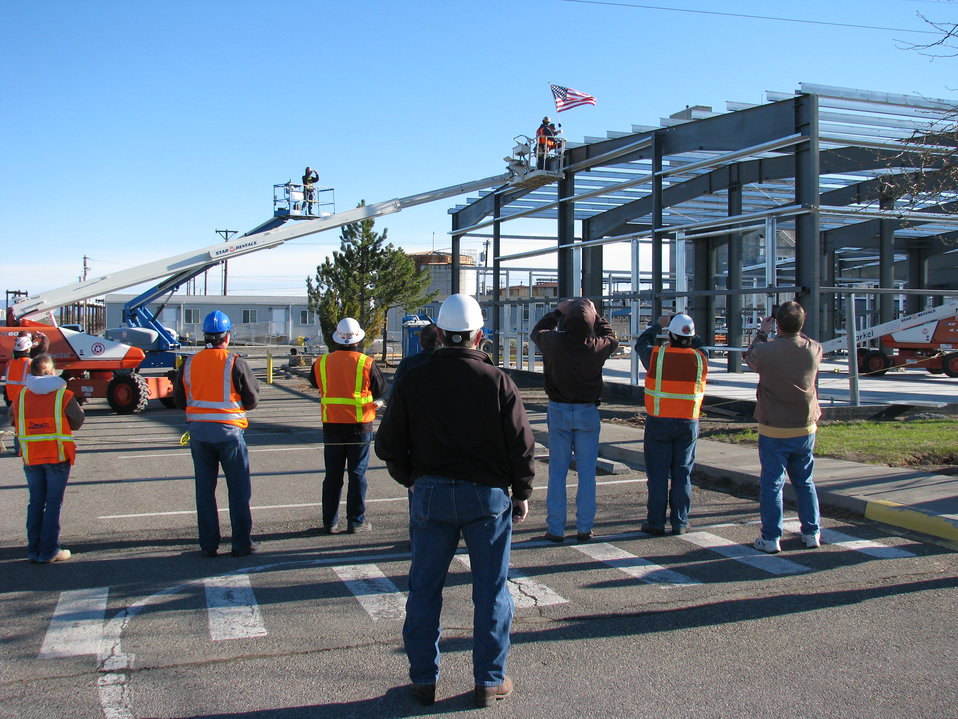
Hanford’s 222-S Laboratory

Construction workers at Hanford’s 222-S Laboratory proudly place a flag firmly atop the 2713-S building to celebrate completion of the facility’s structure. The steel cage frames a 17,000-square-foot facility that, once complete, will house more than 100 workers at the 222-S complex. The building is the last of three Recovery Act-funded structures to be built at the lab. It replaces several aging mobile office trailers and is designed to last through the end of ORP’s long-term mission to retrieve and treat more than 56 million gallons of waste stored in Hanford’s underground tanks.